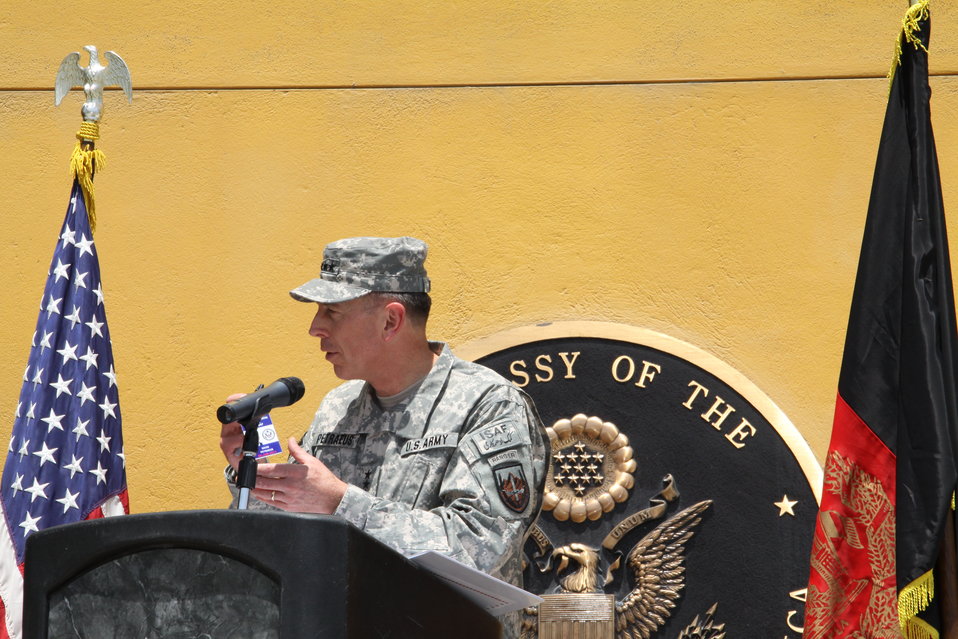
Kabul Official July 4th Celebration